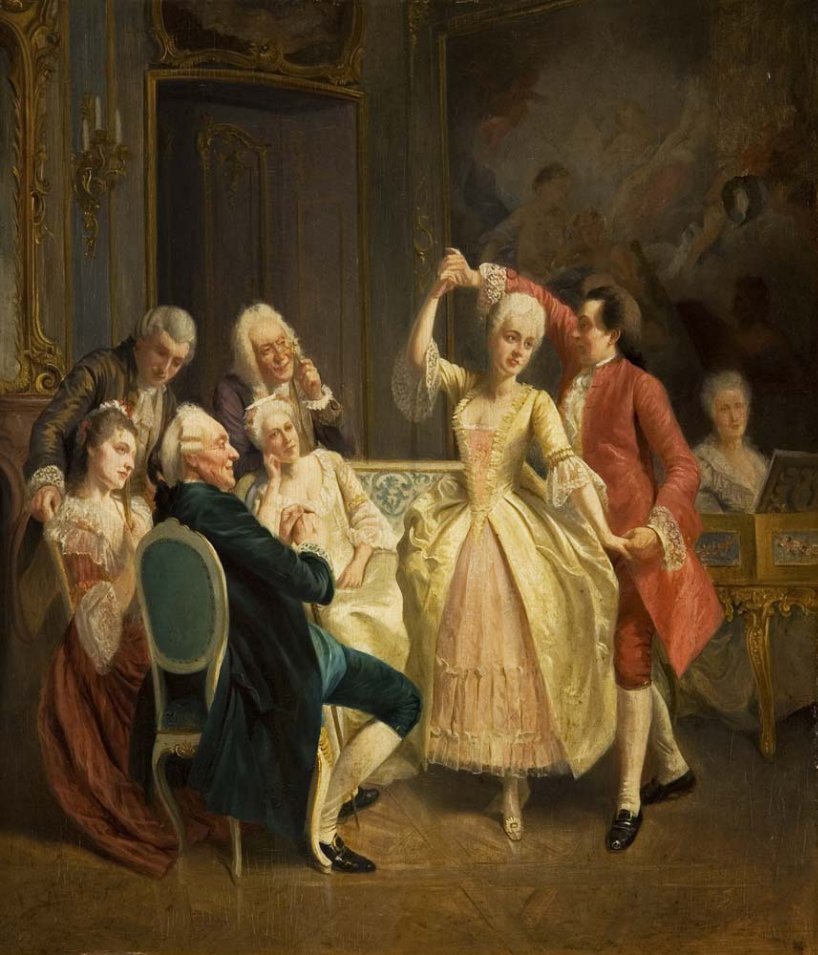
Rococo dance scene